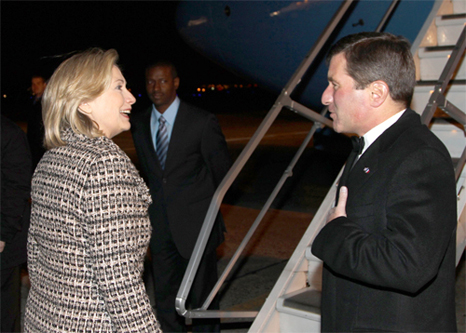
Secretary Clinton Bids Farewell to Ambassador Rivkin

U.S. Secretary of State Hillary Rodham Clinton bids farewell to U.S. Ambassador to France, Charles Rivkin, at the Le Bourget Airport in Paris, France, on March 19, 2011.